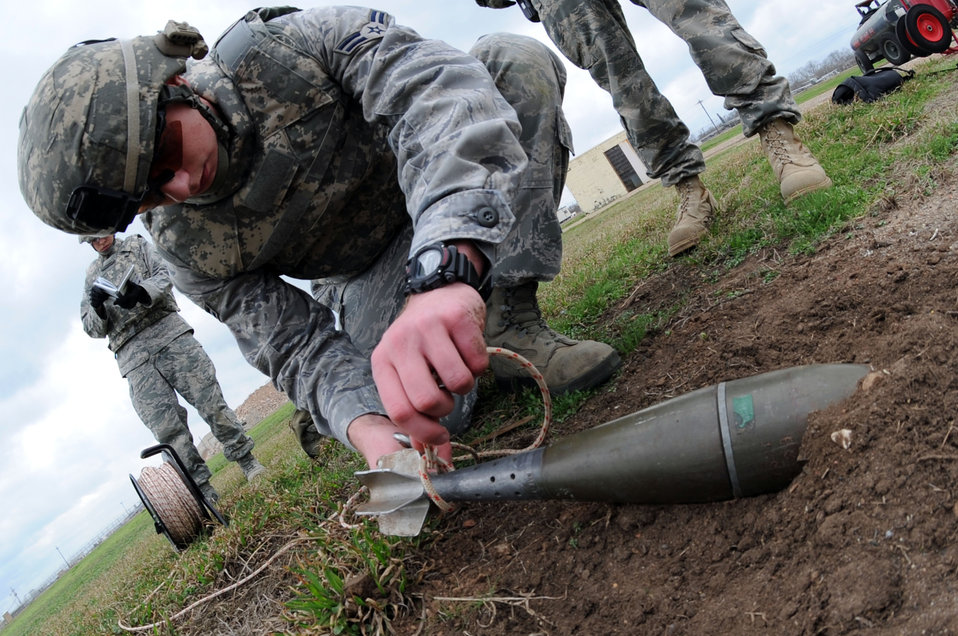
AF recognizes best EOD flight

Airman 1st Class Kyle Miller, a 2nd Civil Engineer Squadron Explosive Ordnance Disposal apprentice, ties a rope around a simulated unexploded ordnance to remotely pull the device during a Conventional Operational Readiness Exercise on Barksdale Air Force Base, La., Feb. 24, 2011. The unit's main mission is to detect, identify, recover and dispose of conventional, incendiary, chemical, biological and nuclear ordnance.